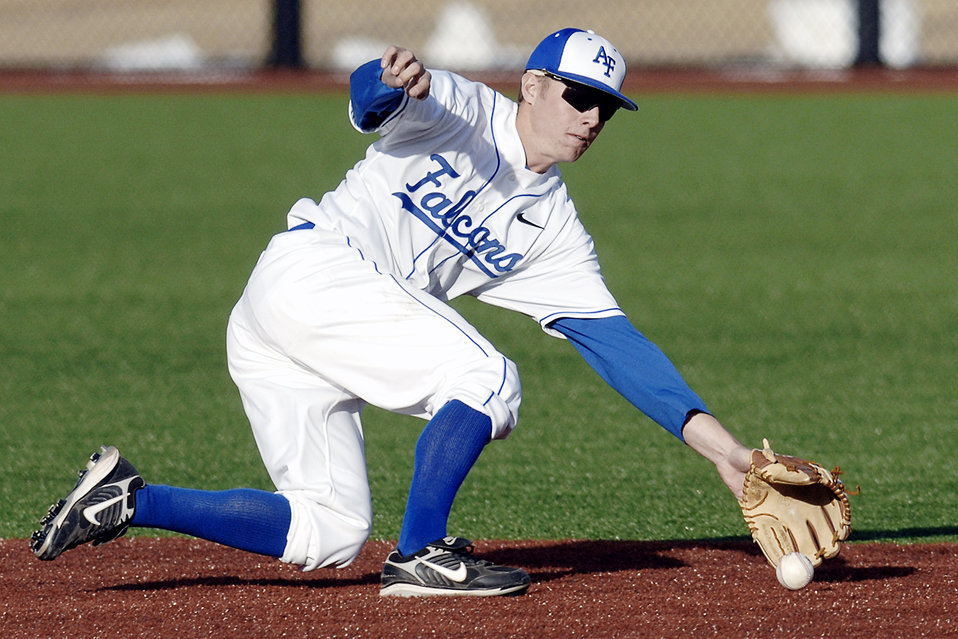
Falcons win baseball home opener

Falcon sophomore baseman Blair Roberts fields a sharp grounder during a 15-5 victory over Colorado Christian in the Air Force home-opener at the U.S. Air Force Academy's Falcon Field March 2, 2010. The win improved the Falcons to 2-6 and dropped the Cougars to 6-9.